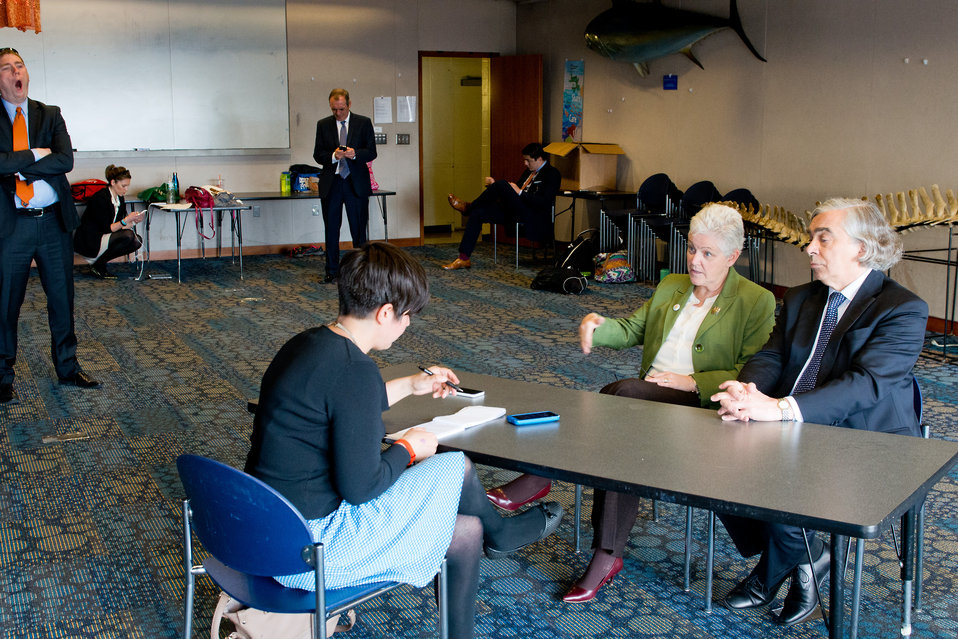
A Day In The Life of the EPA Administrator - April 22, 2014 1:13 pm

McCarthy and Moniz sit down for an interview with the Boston Globe, who was writing a day in the life feature on the two officials.